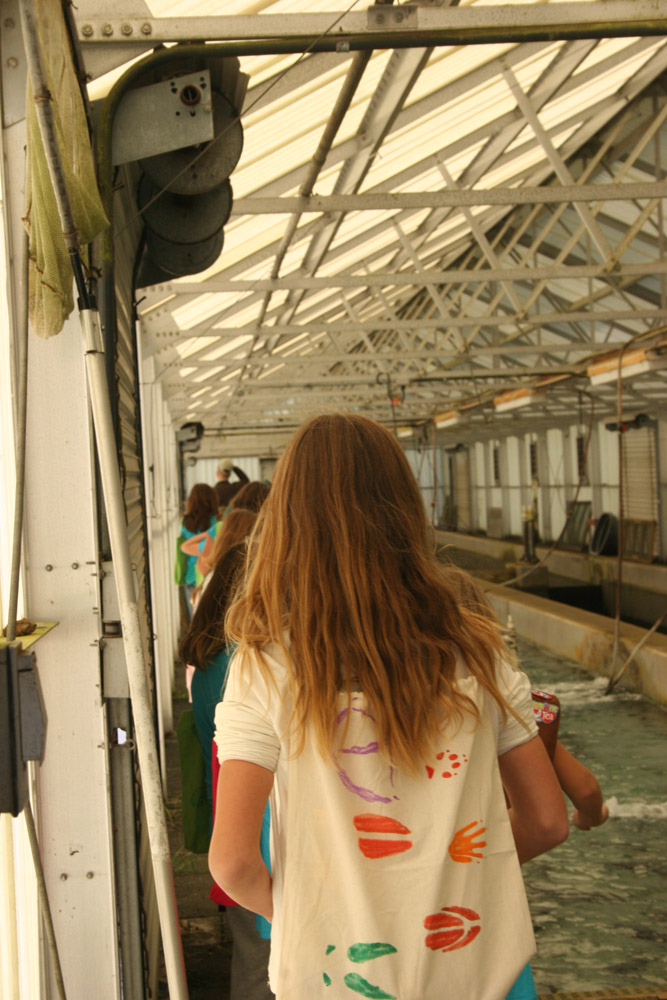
Freshwater Folk Festival (21)